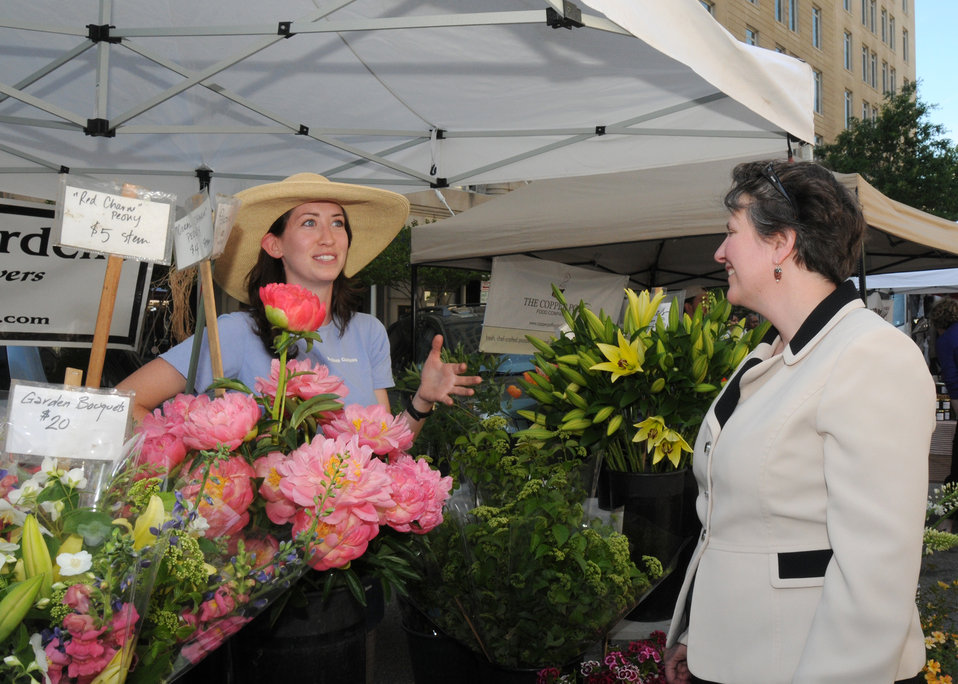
Agriculture Deputy Secretary Kathleen Merrigan wishes a vendor at the Freshfarm Market on Vermont Avenue by the White House , in Washington, D. C., good luck on her sales on Thursday, May 6, 2010. USDA photo 10di1348-149.